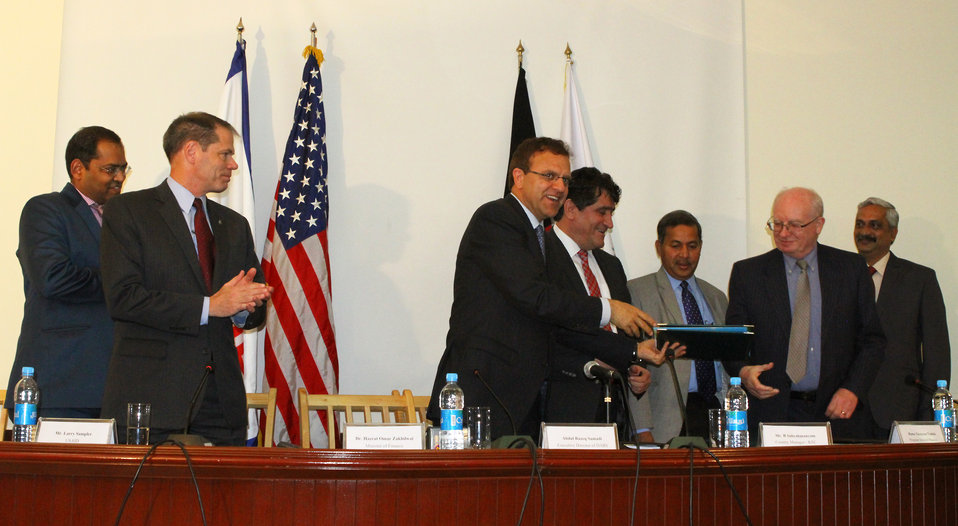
DABS to Extend Power Grid to Southern Afghanistan